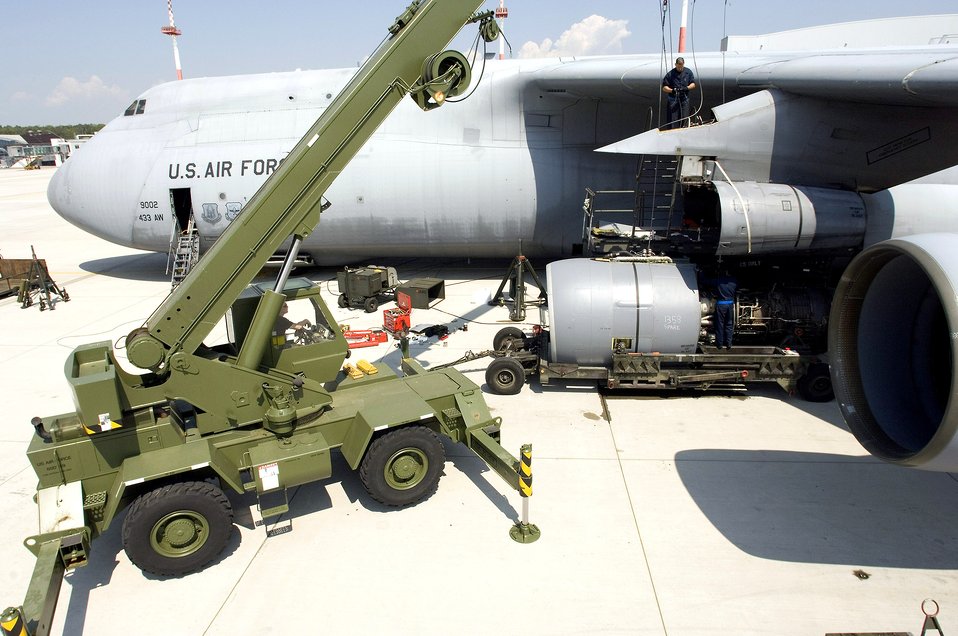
Maintainers keep C-5s flying

Maintainers from the 723rd Air Mobility Squadron prepare to mount an engine on a C-5 Galaxy on May 12, 2006, at Ramstein Air Base Germany.